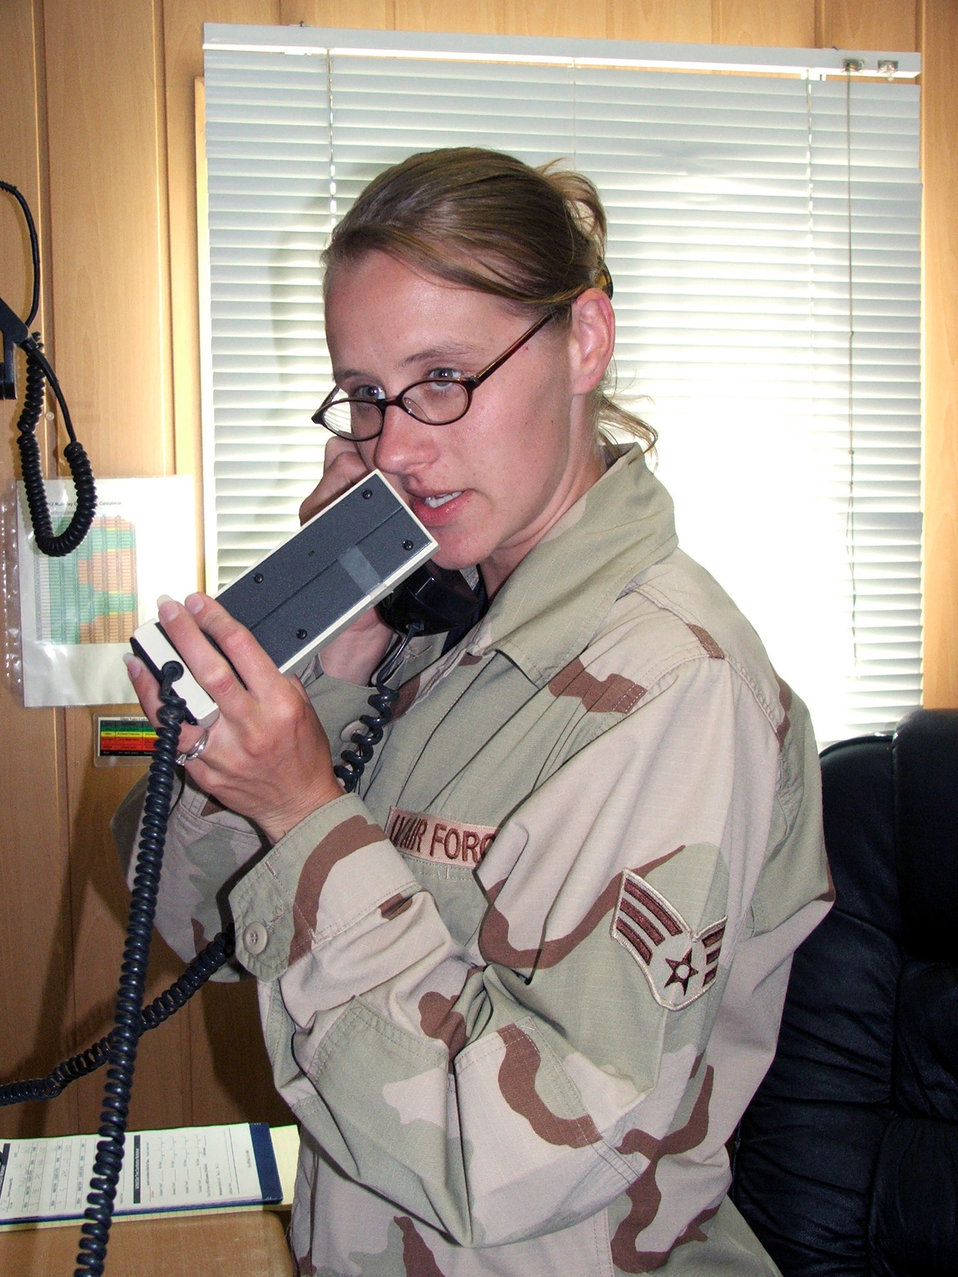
Expeditionary command post Airmen eyes, ears

KARSHI-KHANABAD AIR BASE, Uzbekistan -- Senior Airman MaRyha Self talks on the radio and the phone simultaneously while coordinating information here May 4. She is a controller for the 416th Air Expeditionary Group's command post and is deployed from Barksdale Air Force Base, La.